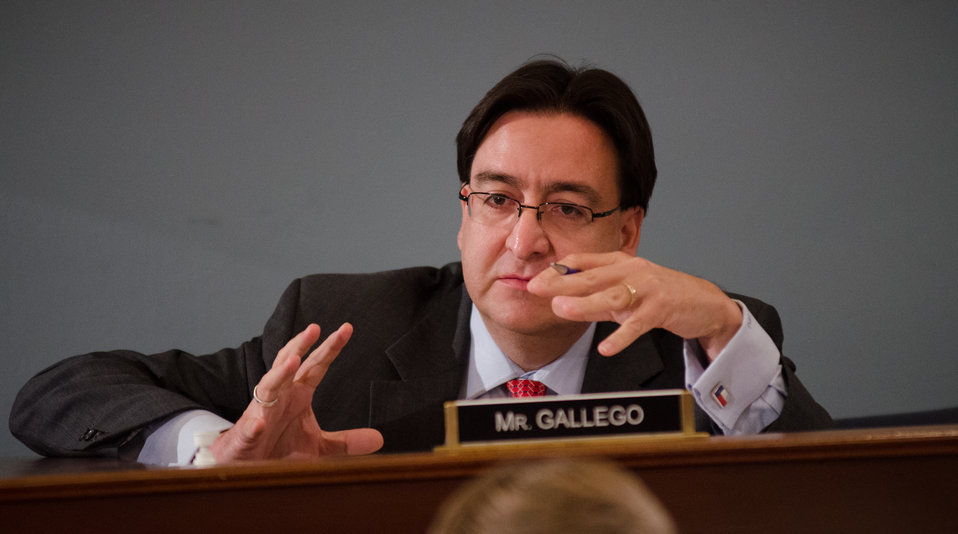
Representative Pete Gallego (TX) questions Agriculture Secretary Tom Vilsack, during his testimony before the House Agriculture Committee regarding the “State of the Rural Economy“ at the Longworth House Office Building in Washington, D.C. on Tuesday, Mar. 5, 2013.